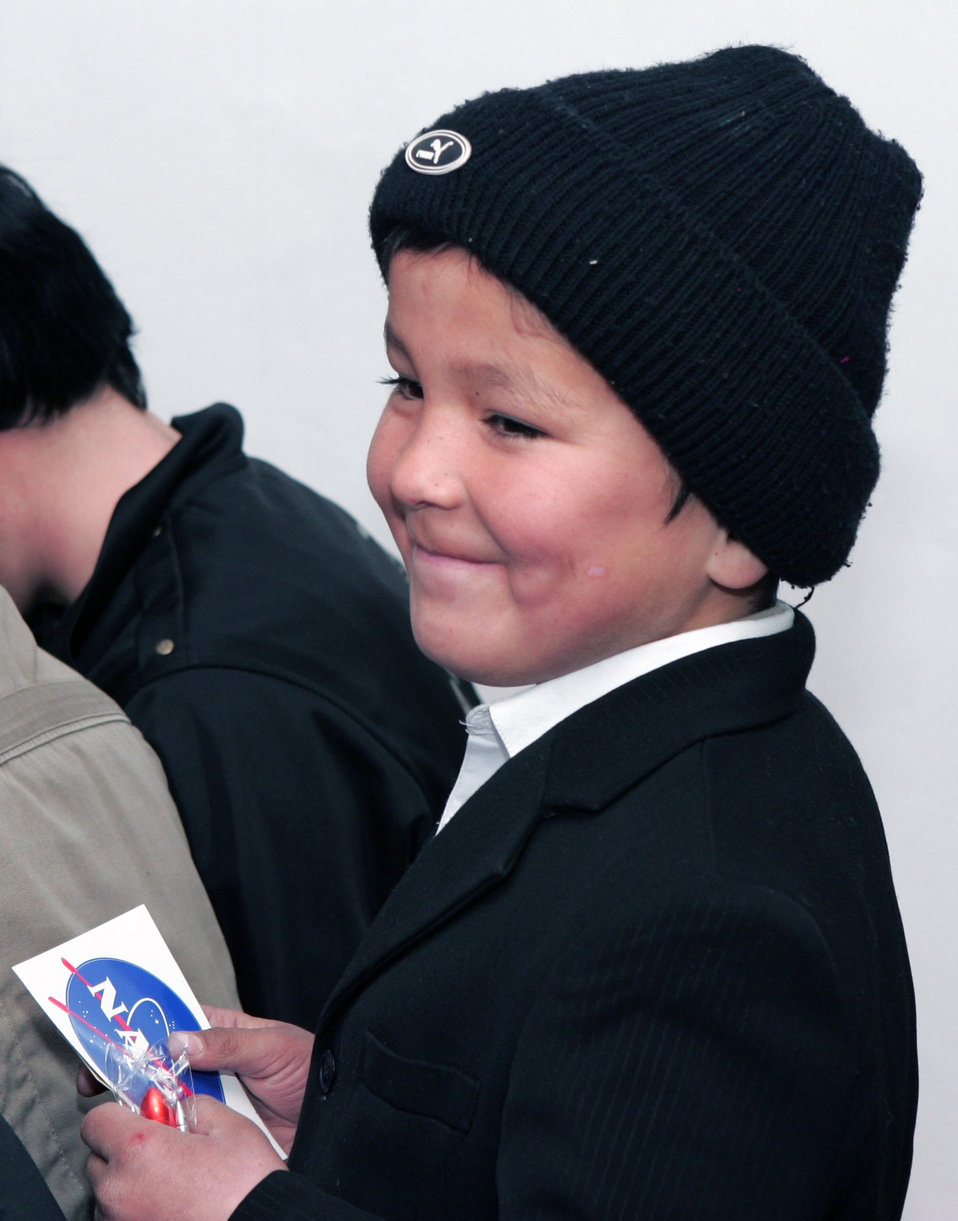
Shuttle Endeavour crew visits Kyrgyzstan village school

A young boy from the Jany-Pakhta village school smiles after receiving souvenirs from the Space Shuttle Endeavour STS-126 astronauts who visited his school Jan. 29 near Manas Air Base, Kyrgyzstan. The six space shuttle crewmembers spoke of the journey, which launched from Kennedy Space Center in Florida Nov. 14 and returned Nov. 30, 2008.